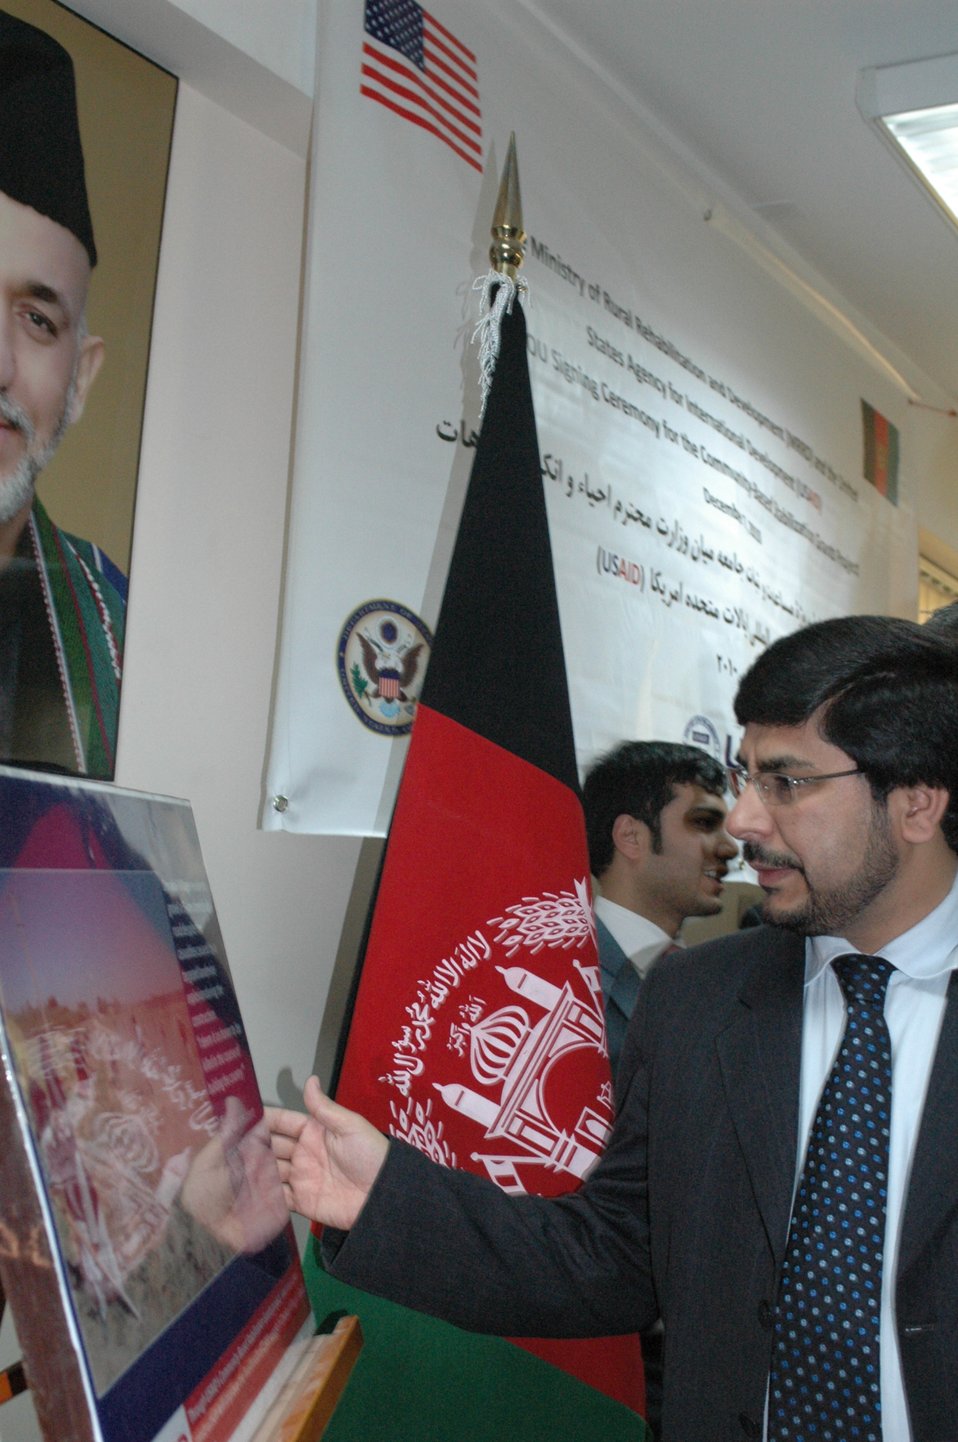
Community Based Stabilization Grants Ceremony, December 7, 2010